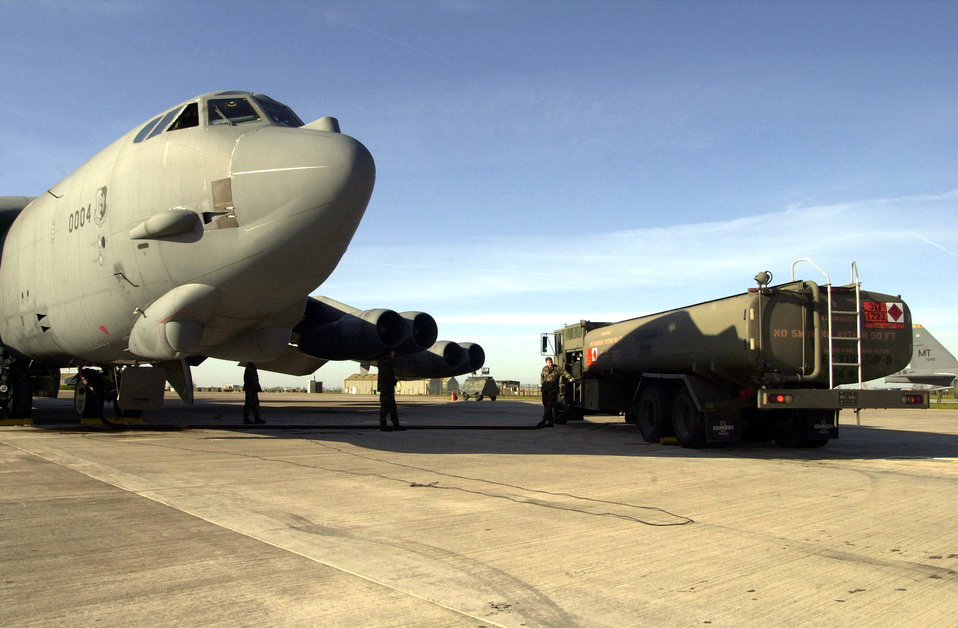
Thirsty Buff

OPERATION IRAQI FREEDOM -- A B-52 Stratofortress is refueled before the jet returns back to its next mission. The base at which the B-52s are located is currently home of the 457th Air Expeditionary Group which has been positioned to support Operation Iraqi Freedom. The operation is the multinational coalition effort to liberate the Iraqi people, eliminate Iraq's weapons of mass destruction and end the regime of Saddam Hussein.